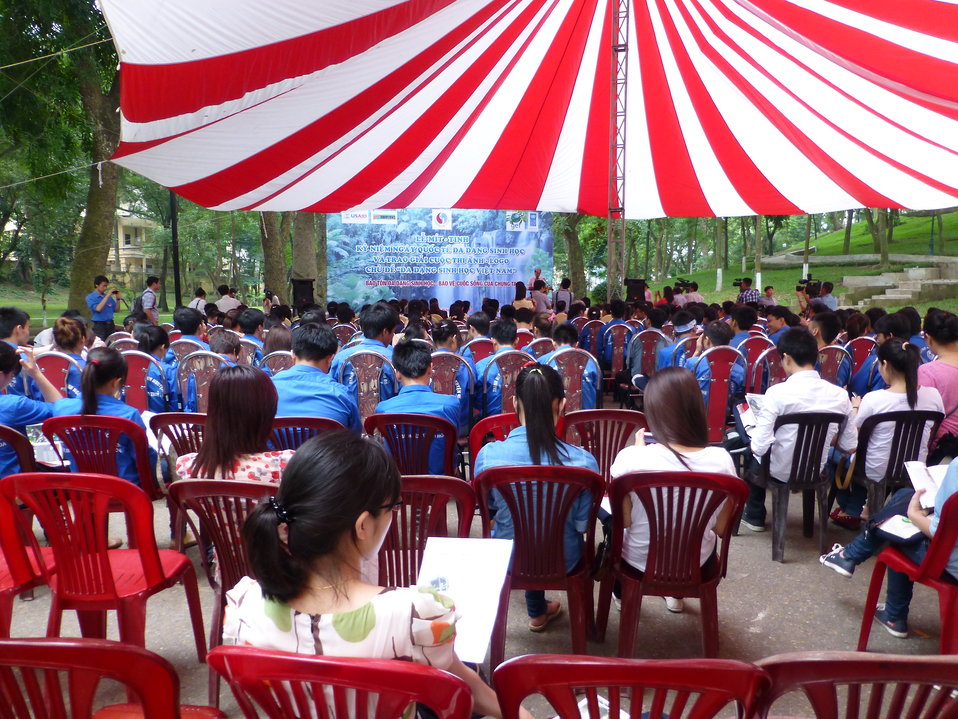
USAID Supports International Day for Biological Diversity in Hanoi